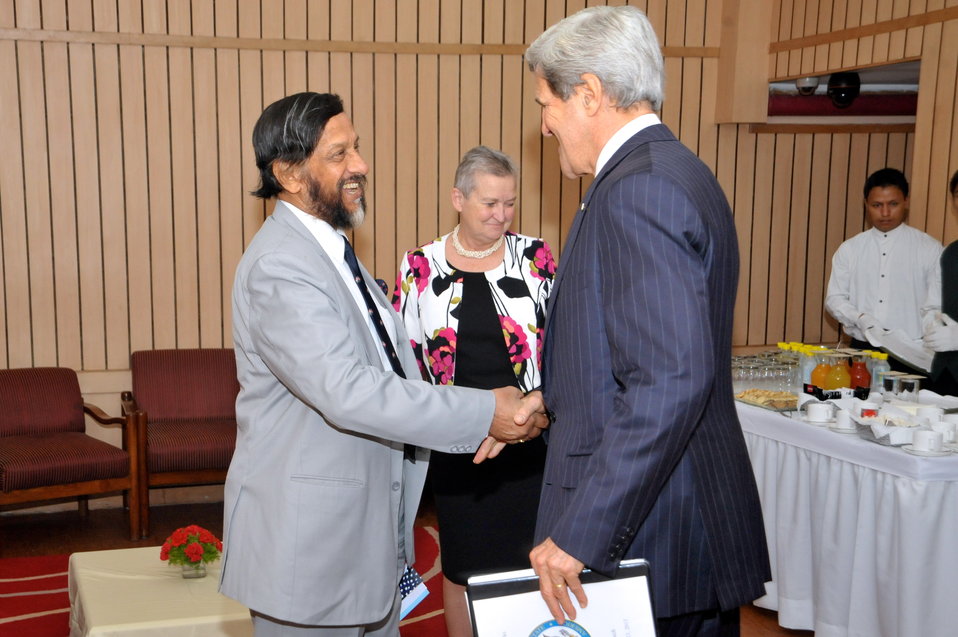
Secretary Kerry Meets With Nobel Laureate Dr. R.K. Pachauri

U.S. Secretary of State John Kerry meets with Nobel Laureate Dr. R.K. Pachauri before his speech on U.S.-India relations in New Delhi, India on June 23, 2013.